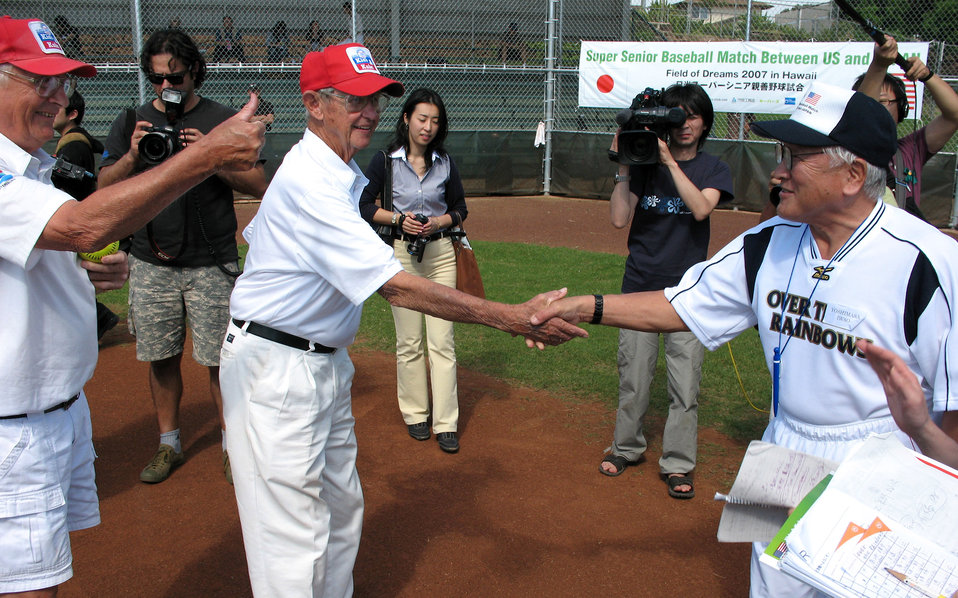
Time, and softball, heal old wounds

84-year-old Pete Murphy, captain of the Kids & Kubs senior softball team from St. Petersburg, Fla., and 74-year-old Yoshimasa Iwao, captain of the Over the Rainbows senior softball team from Japan, shake hands before their game Dec. 19 at Hans L'Orange Park in Waipahu, Hawaii. The two teams, comprising WWII veterans, met here to make peace with the past and play this historic game. The Kids & Kubs won the game 14-2.